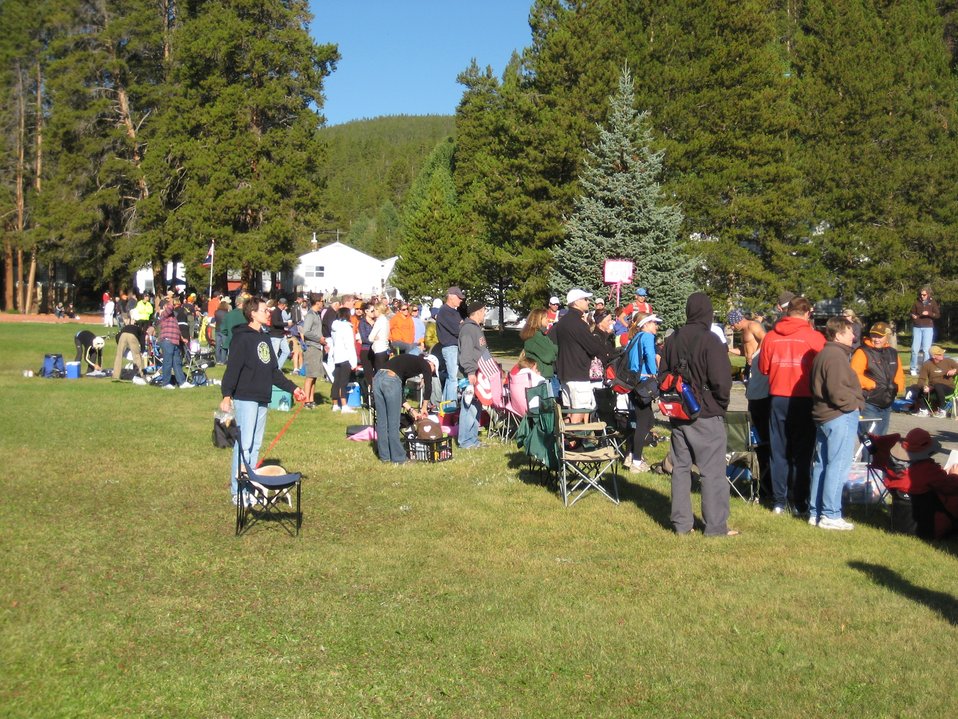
Leadville National Fish Hatchery 5K

People gather in support of the participants in the Leadville National Fish Hatchery 5K in Colorado. This event is held each year during the first weekend in June. The race usually draws between 80-100 runners each year.